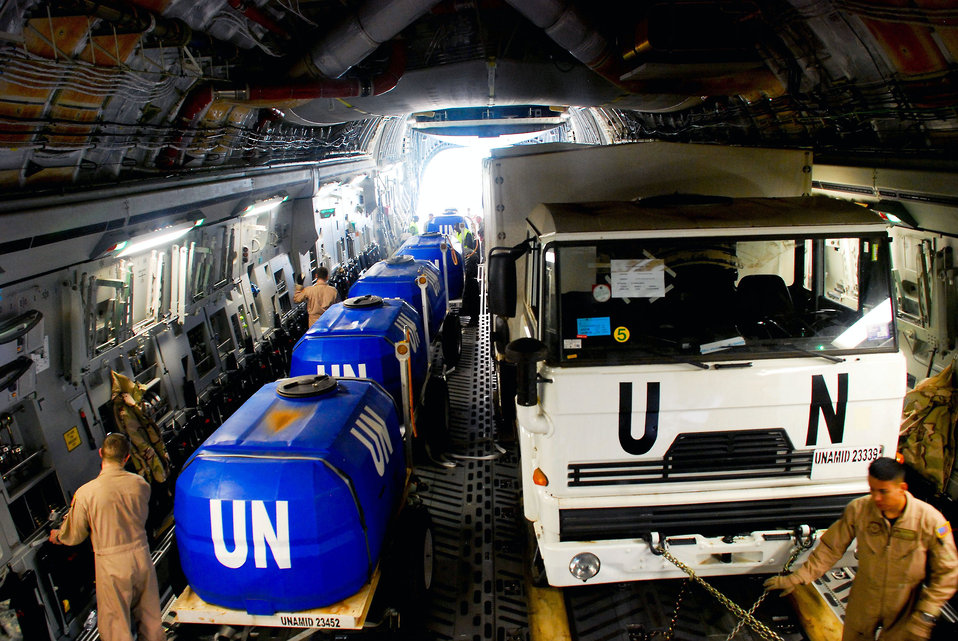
Airmen begin Darfur airlift operations

Loadmasters secure Rwandan defense force vehicles and water tanks on board a C-17 Globemaster III Jan. 13 at Kigali International Airport in Rwanda. This is the first load of five airlift missions to the United Nations Mission in Darfur. The Airmen are from Travis Air Force Base, Calif.